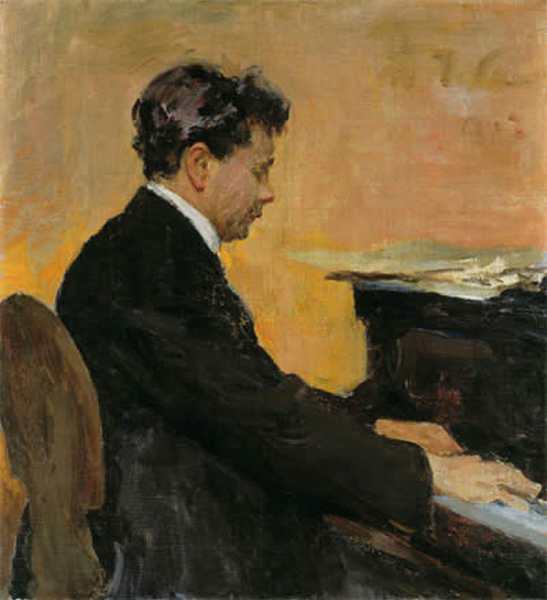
Portrait of Jozef Hofmann, Polish pianist